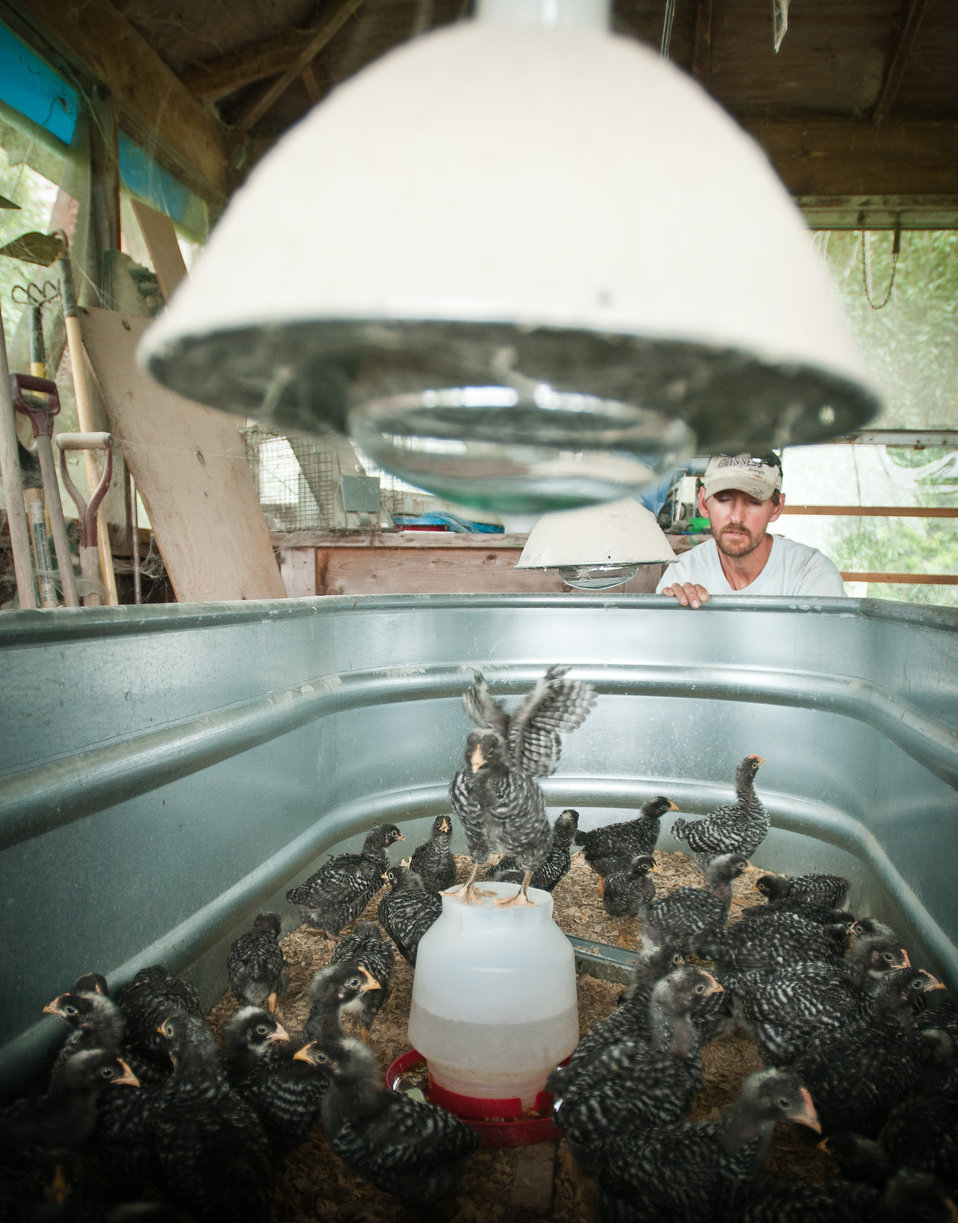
Farm assistant George Kloph checks on the health of chicks at Nick’s Organic Farm, in Adamstown, MD, on Friday, July 12, 2013. The farm, owned by Nick Maravell, produces Black Angus beef, chicken, turkey, eggs, hay, soybeans, corn, alfalfa, orchard grass, rye; and other crops. The cattle are100% grass-fed receiving certified organic pasture, certified organic hay (in winter), water and mineral salts mixed with sea kelp. The cattle are not fed hormones, antibiotics or animal products. Poultry feed from grain is ground from organic grain. The poultry also graze on organic pastures. The farm has conducted on-farm research with federal, state and non-profit agencies to refine organic practices.